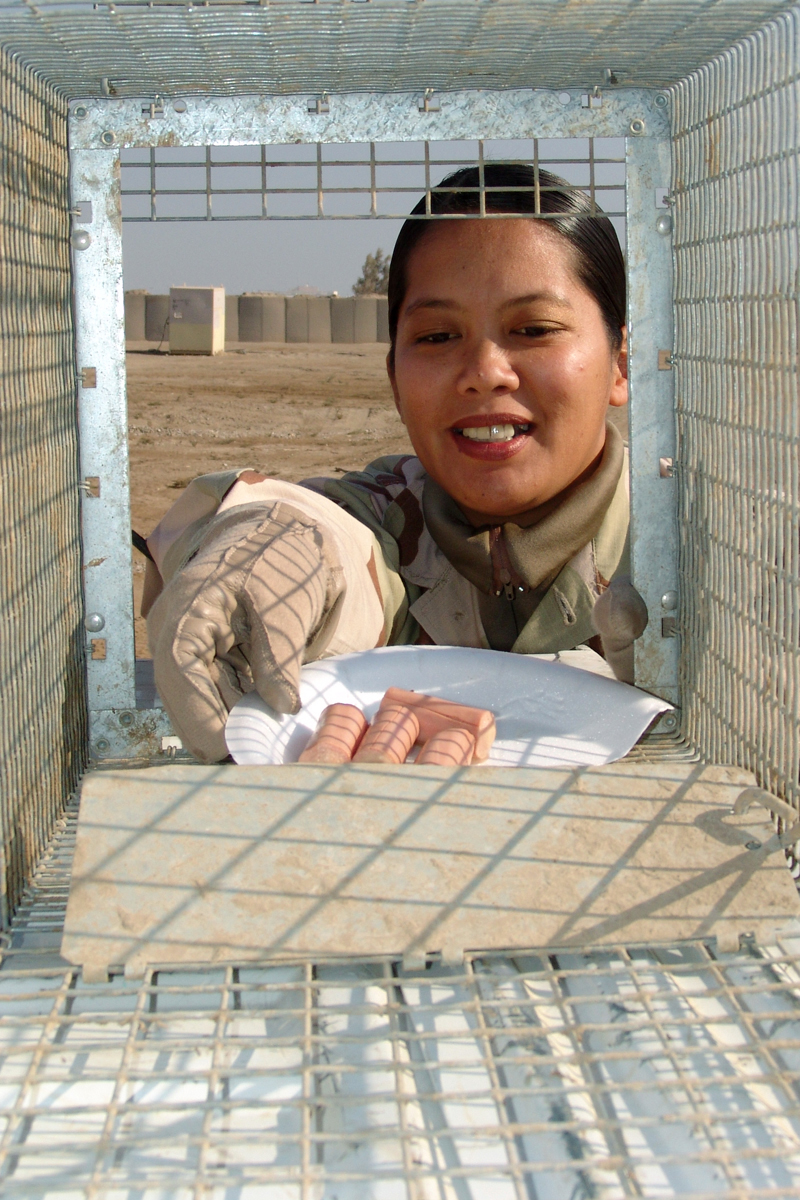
Pests no match for 'Bug Girl'

BAGHDAD, Iraq -- Senior Airman Amy Arriola sets a trap to catch stray cats and foxes. She is the pest controller for the 447th Expeditionary Civil Engineer Squadron at Camp Sather here, and is deployed from Guam Air National Guard's 254th CES.